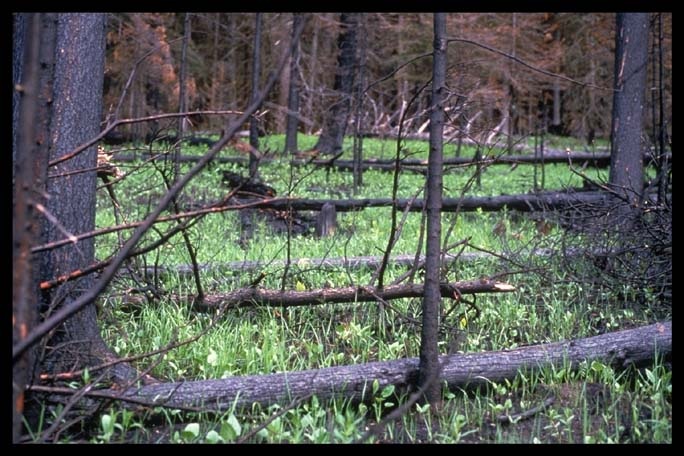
Regrowth